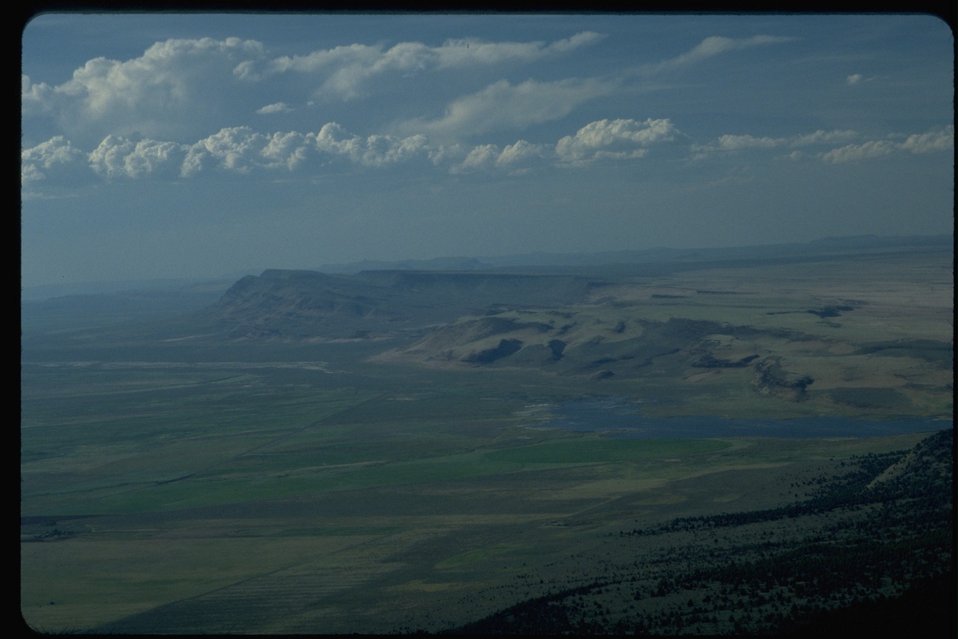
The Big Ugly" just west of Abert Rim.